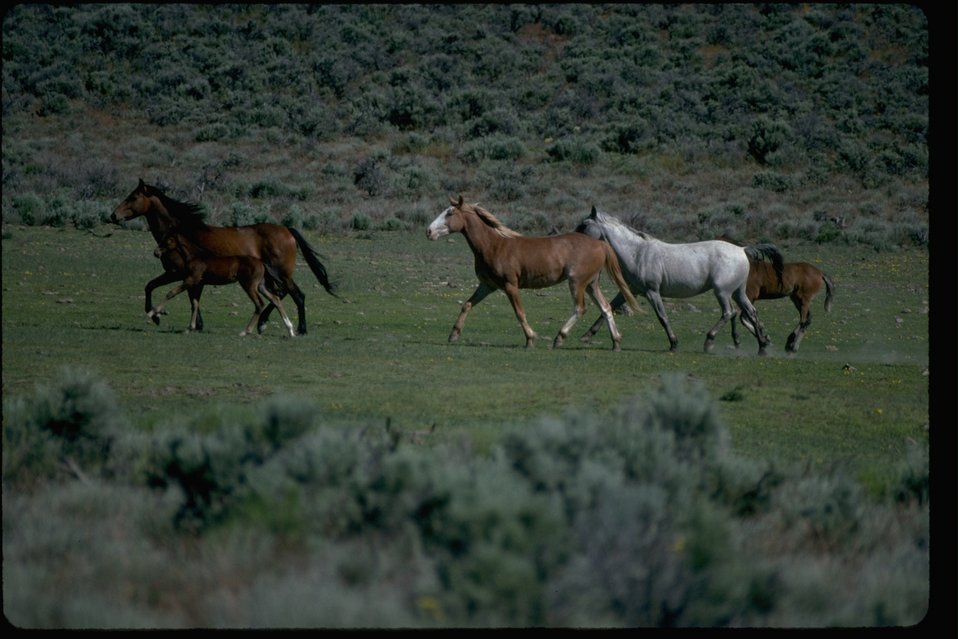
East Warm Springs Herd Management Area wild horse band. Located in the Burns District in Southeastern Oregon.